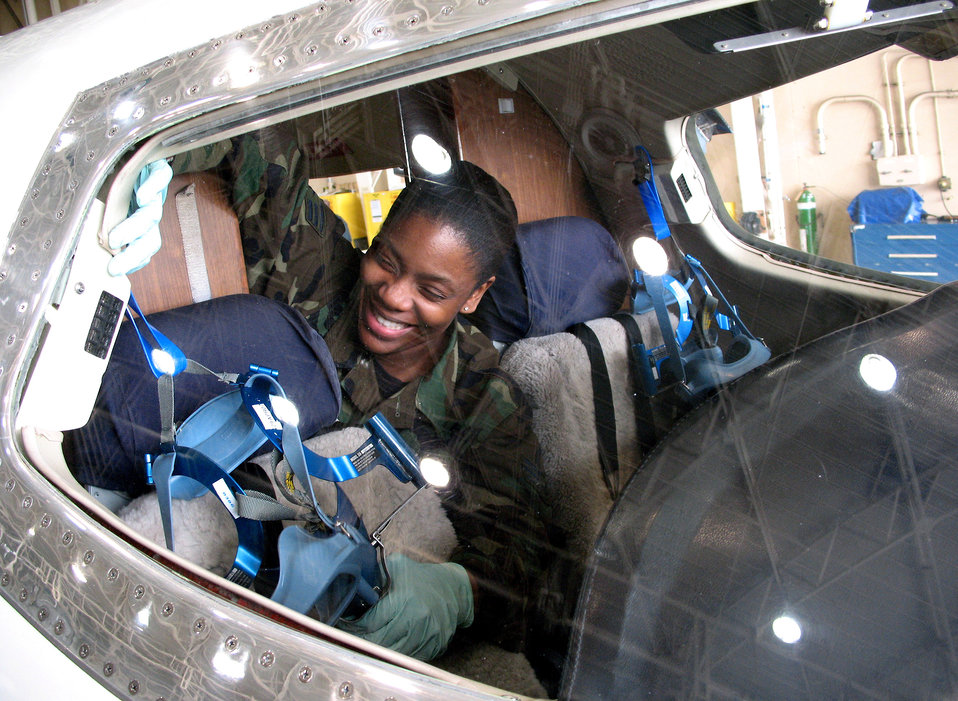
Life support crew puts pilots', passengers' safety first

Senior Airman Jonita Lassiter inspects a C-21 pilot's mask during a pre flight inspection. Airman Lassiter is an aircrew life support technician assigned to the 459th Airlift Squadron at Yokota Air Base, Japan.